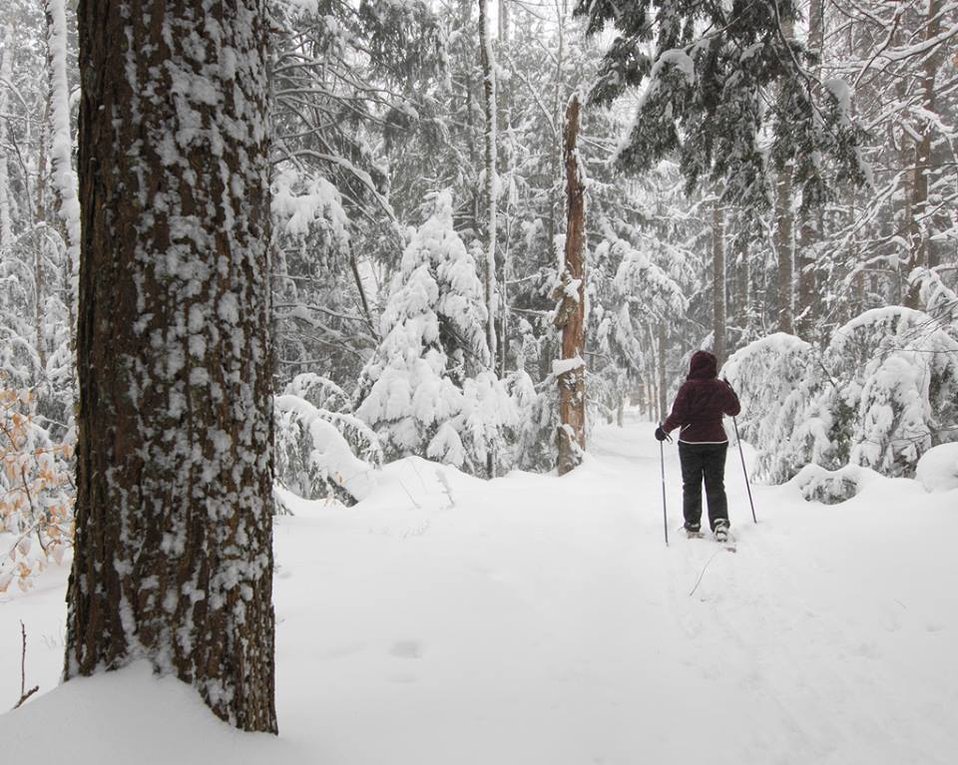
Snowshoeing

Seney National Wildlife Refuge, MI.